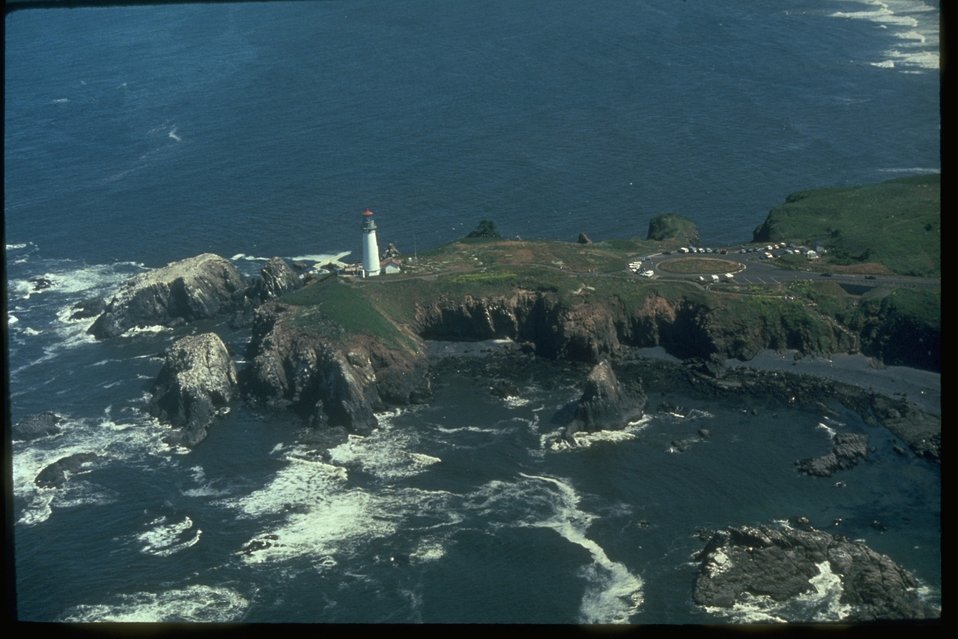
Aerial view of the Yaquina Head lighthouse and parking area.